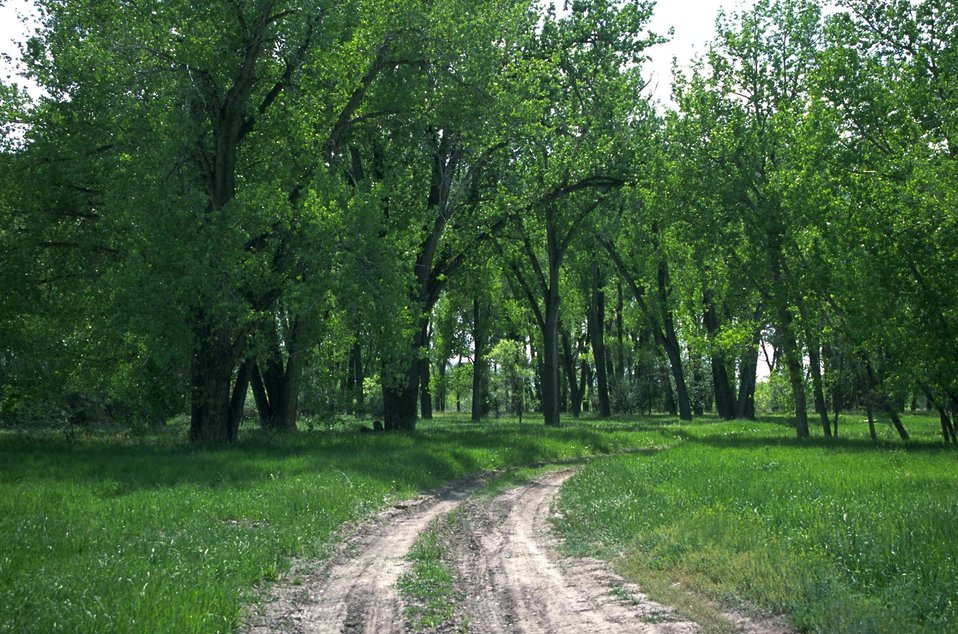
The administrative road that goes through a grove of cottonwood trees in the Sundance Lodge Recreation Area